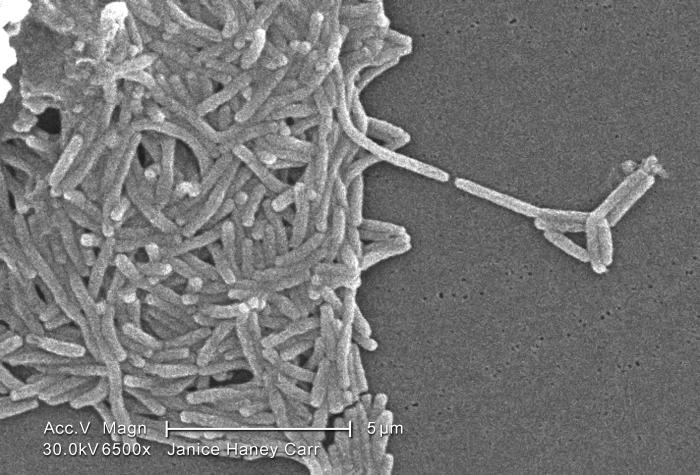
Under a high magnification of 6500X, this scanning electron micrograph (SEM) depicted a large grouping of Gram-negative Legionella pneumophila bacteria. Please see PHIL 11092 through 11152 for additional SEMs of these organisms, and specifically PHIL 11093 for a colorized version of this image.